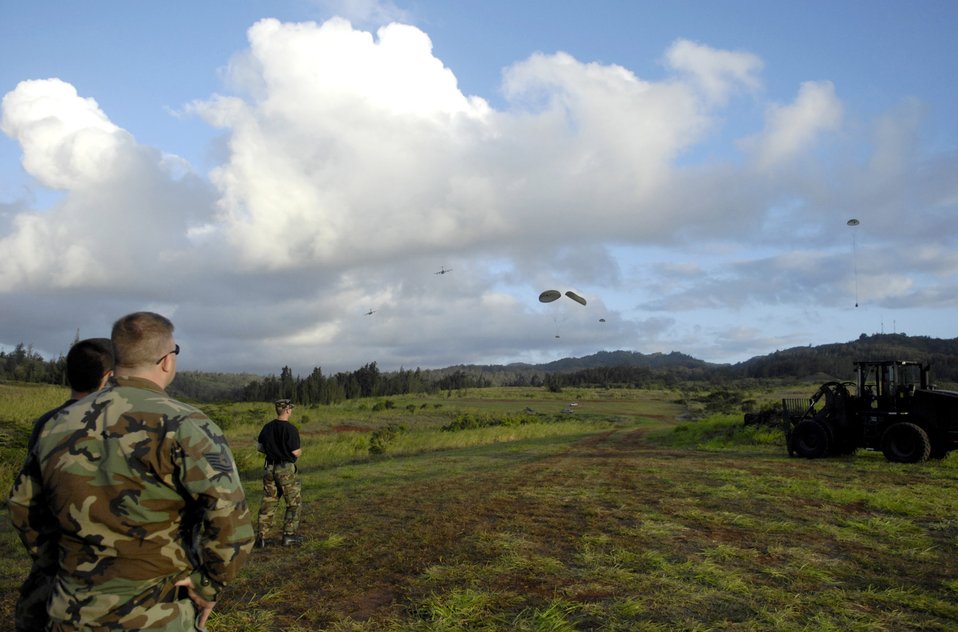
Load 'em up, drop 'em out

Air transportation specialists watch the 535th Airlift Squadron's C-17 Globemaster IIIs run quarterly airdrop qualifications June 11 at the Kahuku Training Range in Hawaii. The Airmen who had loaded the cargo bundles are from the 15th Logistics Readiness Squadron Combat Mobility Element and the C-17s are from Hickam Air Force Base, Hawaii.